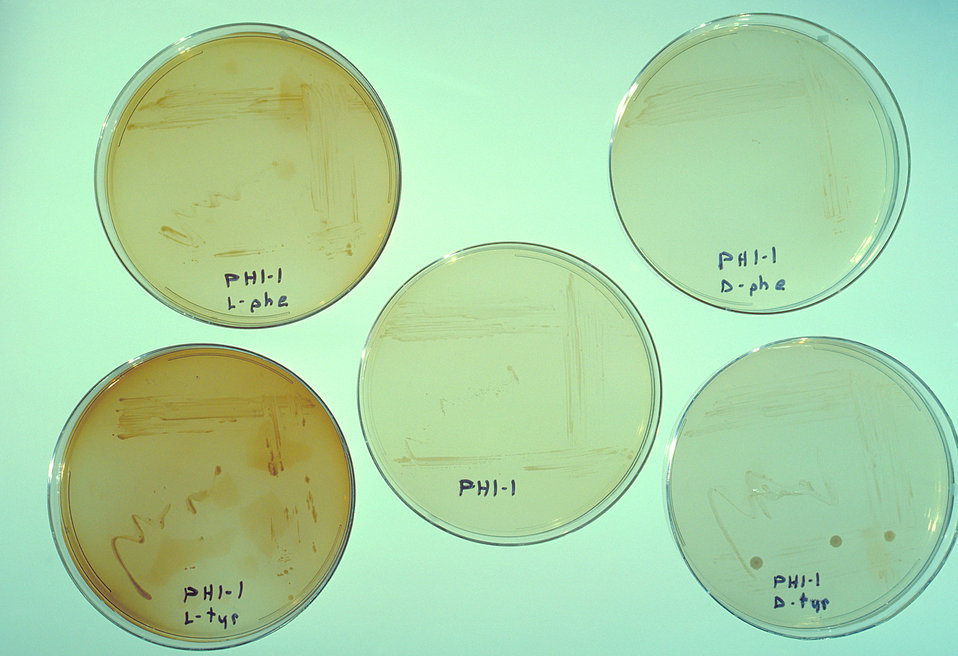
Agar plate cultures of various strains of Legionella pneumophila.